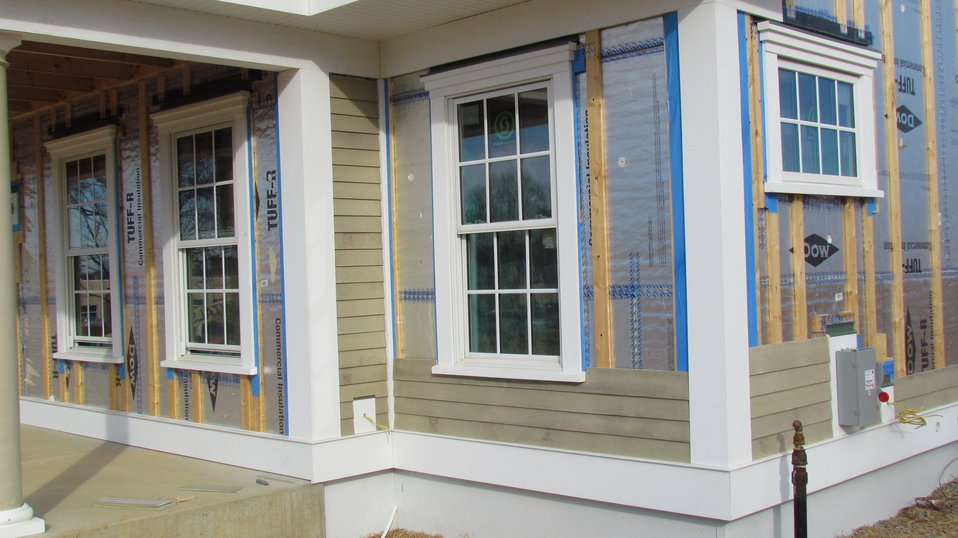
Beginning of cement-fiberboard siding installation process.